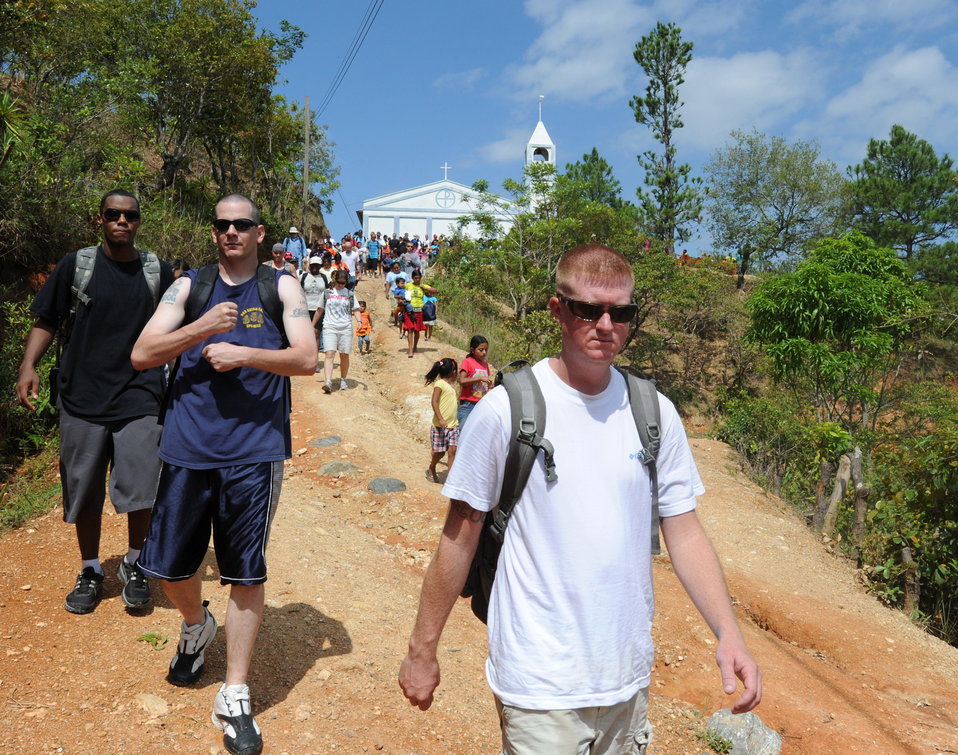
JTF-B

Joint Task Force-Bravo Airmen, Soldiers, Sailors and Marines hike down a hill after delivering bags of food to an isolated village June 11, 2011, near Comayagua, Honduras. More than 120 Joint Task Force Bravo personnel hiked two miles up steep terrain to deliver food to people living in the town.